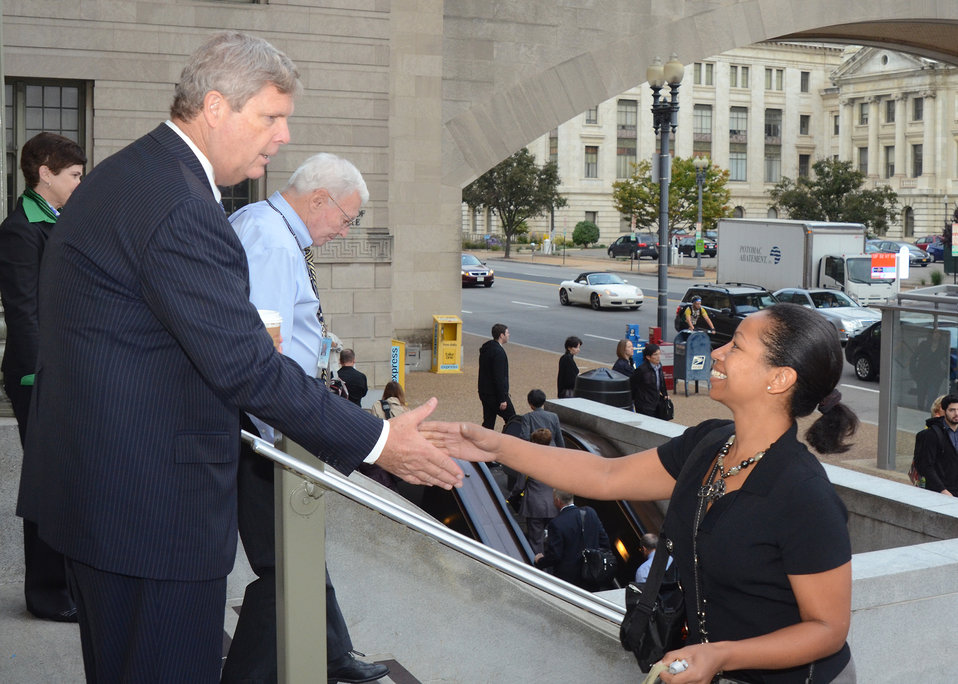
Agriculture Secretary Tom Vilsack welcomes employees back to work on the steps of the U.S. Department of Agriculture's South Building on Thursday, Oct. 18, 2013.